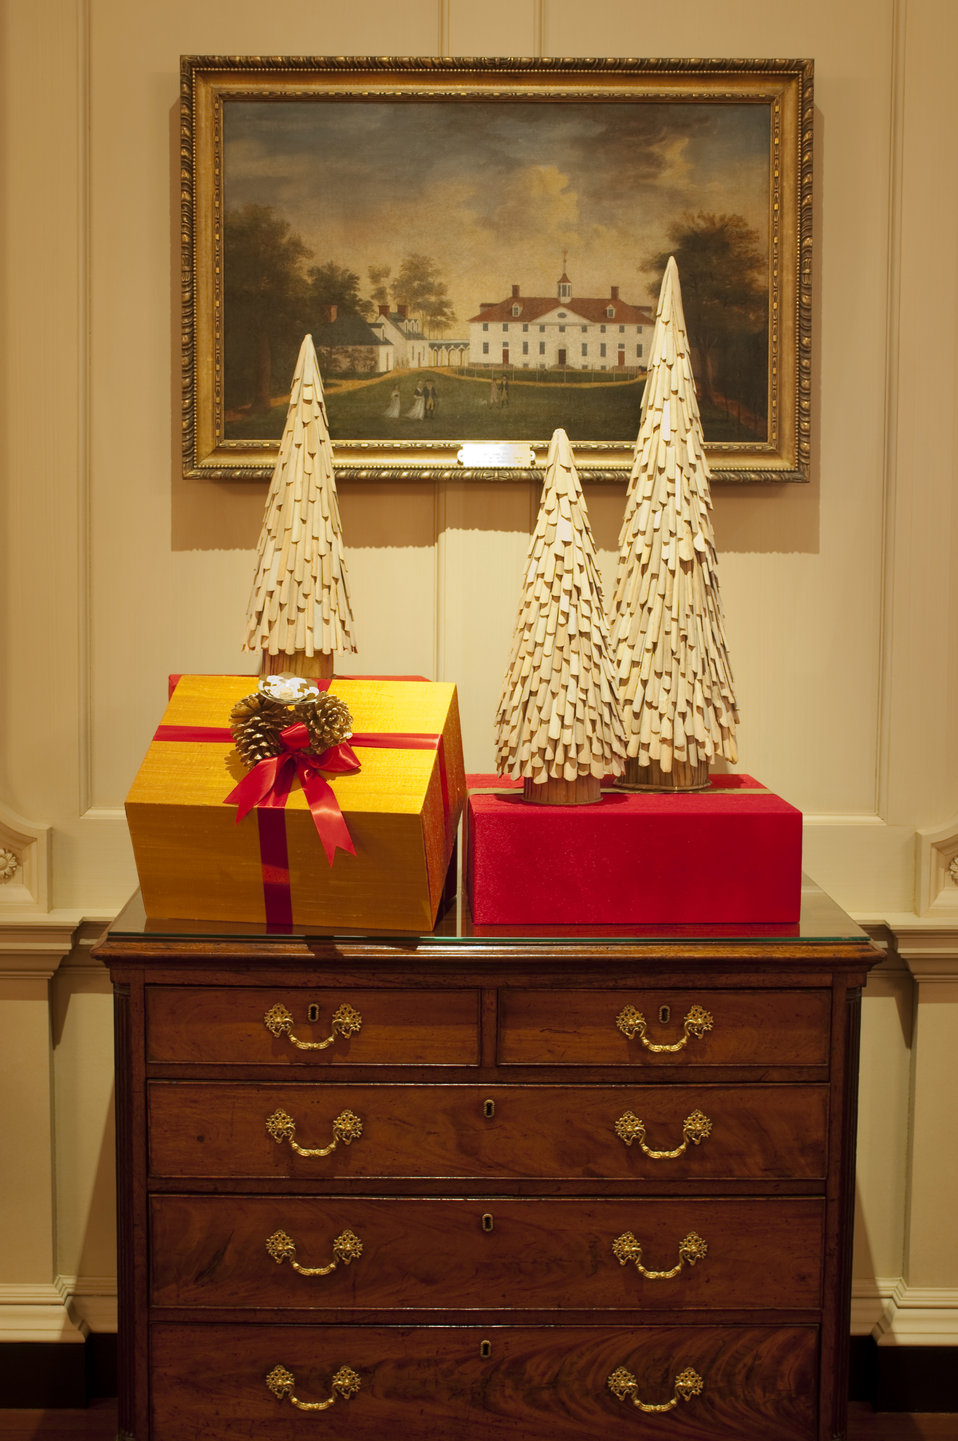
The U.S. Department of State Partners With Time Inc. and InStyle To Decorate the John Quincy Adams State Drawing Room

The U.S. Department of State partners with Time Inc. and InStyle to decorate the Diplomatic Reception Rooms for the Holidays in December 2010. Pictured in this photo is the John Quincy Adams State Drawing Room.